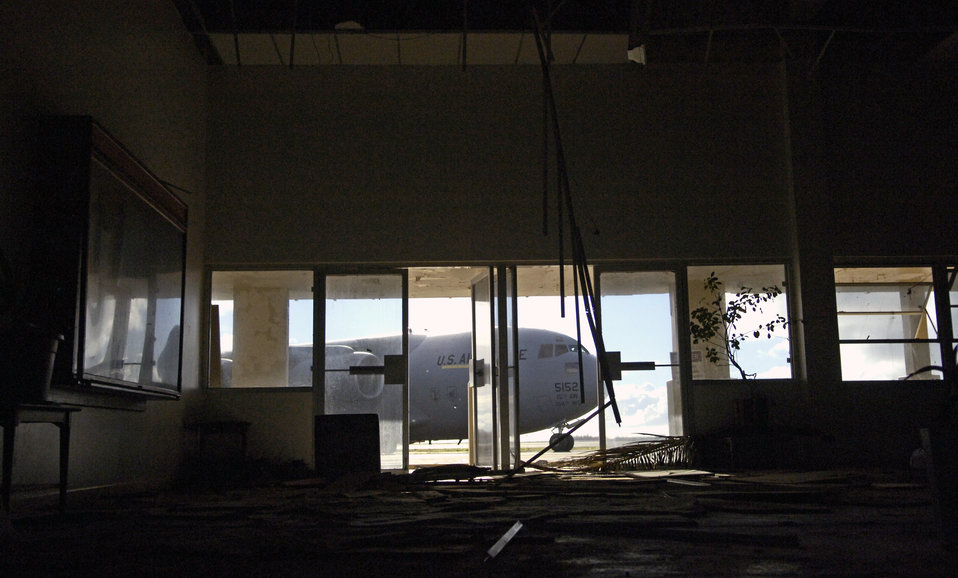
Hickam team begins Wake Island assessment

A C-17 Globemaster III is seen through the damaged airfield operations building on Wake Island Sept. 12. The C-17, from the 535th Airlift Squadron at Hickam Air Force Base, Hawaii, is taking the 36th Contingency Response Group from Andersen AFB, Guam, back home. The 36th CRG was the initial assessment team on the island to survey the damage after the island was hit by Super Typhoon Ioke Aug. 31.